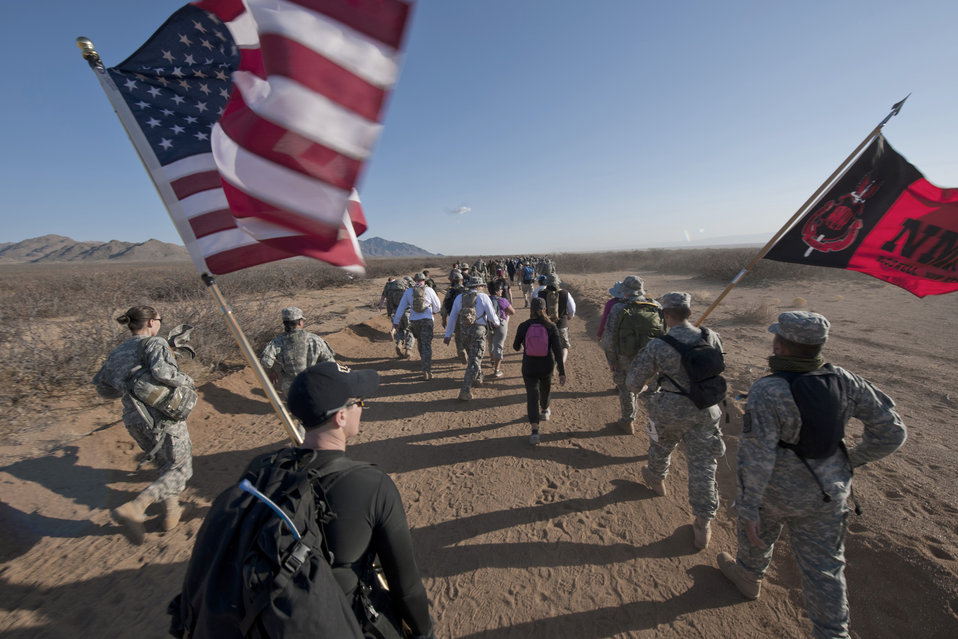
Memorial marathon eternalizes Bataan Death March

Participants of the 22nd Annual Bataan Memorial Death March trek through the 26.2-mile desert trail March 27, 2011, at White Sands Missile Range, New Mexico. The event, attended by a record number of more than 6,000 marchers, commemorated the original Bataan Death March, which occurred in the Philippines during World War II.